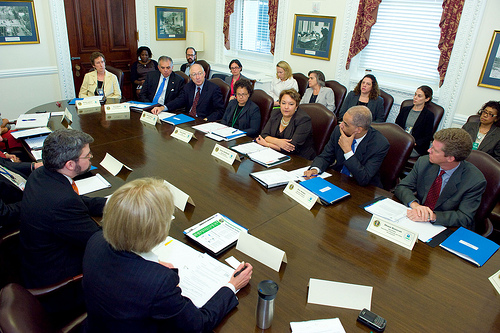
Environmental Justice meeting

September 22, 2010. EPA Hosts Historic Meeting on Environmental Justice. For the first time in more than a decade, federal government reconvene the Interagency Working Group on Environmental Justice, showing committment under new administration to a healthy environment for all

Left to Right, Martha Johnson, Administrator, General Services Administration, Ray LaHood, Secretary, Department of Transportation, Kenneth Salazar, Secretary, Department of Interior, Nancy Sutley, Chair, Council on Environmental Quality, Lisa P. Jackson, Administrator, Environmental Protection Agency, Eric Holder, Attorney General, Shaun Donavan, Secretary, Department of Housing and Urban Development.